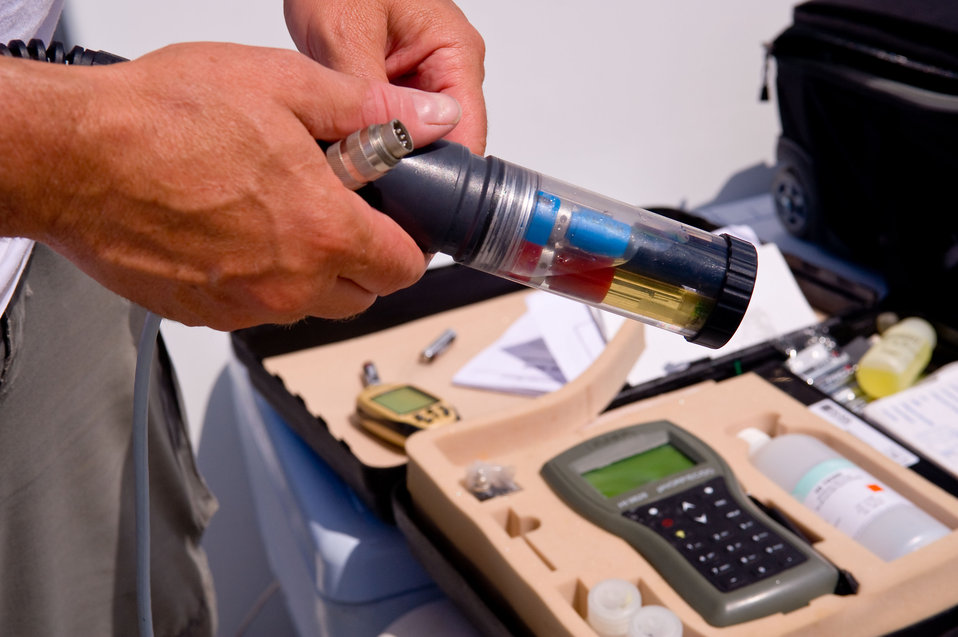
Water testing in the Gulf in response to the BP oil spill

May 12, 2010. Salinity, temperature, Ph testing. Curtis Franklin, Dougherty Srague Environmental Inc. EPA contractor.